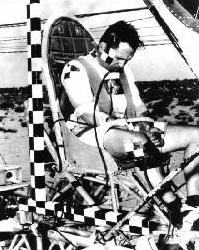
Colonel (Dr.) John Paul Stapp

1950's -- Dr. John Paul Stapp was not only the